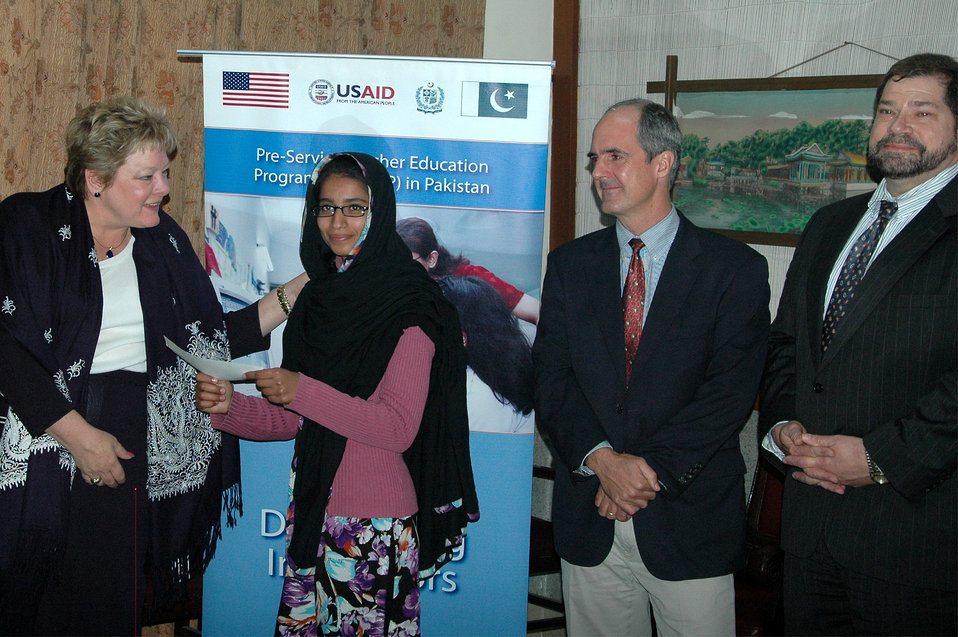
Pre-Service Teachers Education Program (Pre-STEP)

Lahore, February 21, 2012 - Deputy Mission Director USAID Ms. Karen Freeman distributing scholarships to B. Ed (Hons.) students at IER, University of the Punjab. Mr. Ted Gehr, Provincial Director USAID/Punjab is also present at the occasion.